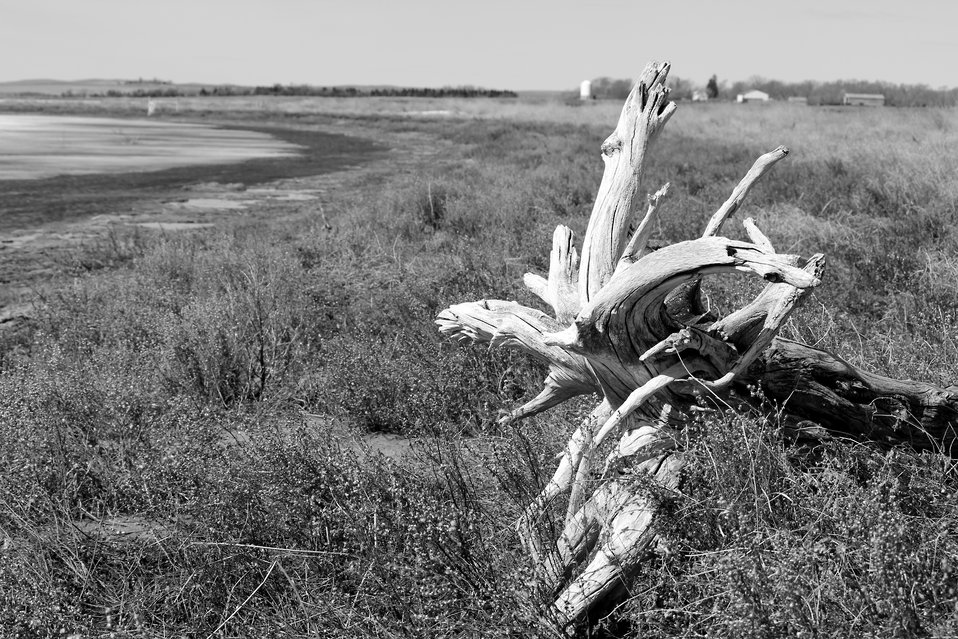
Baltzer WPA Roots

Much of Baltzer WPA in the Kulm WMD has been subject to the rising waters of the large wetland that is part of the WPA. The consecutive years of wet weather have swelled the basin to the point that it has risen many feet and now supports game fish.